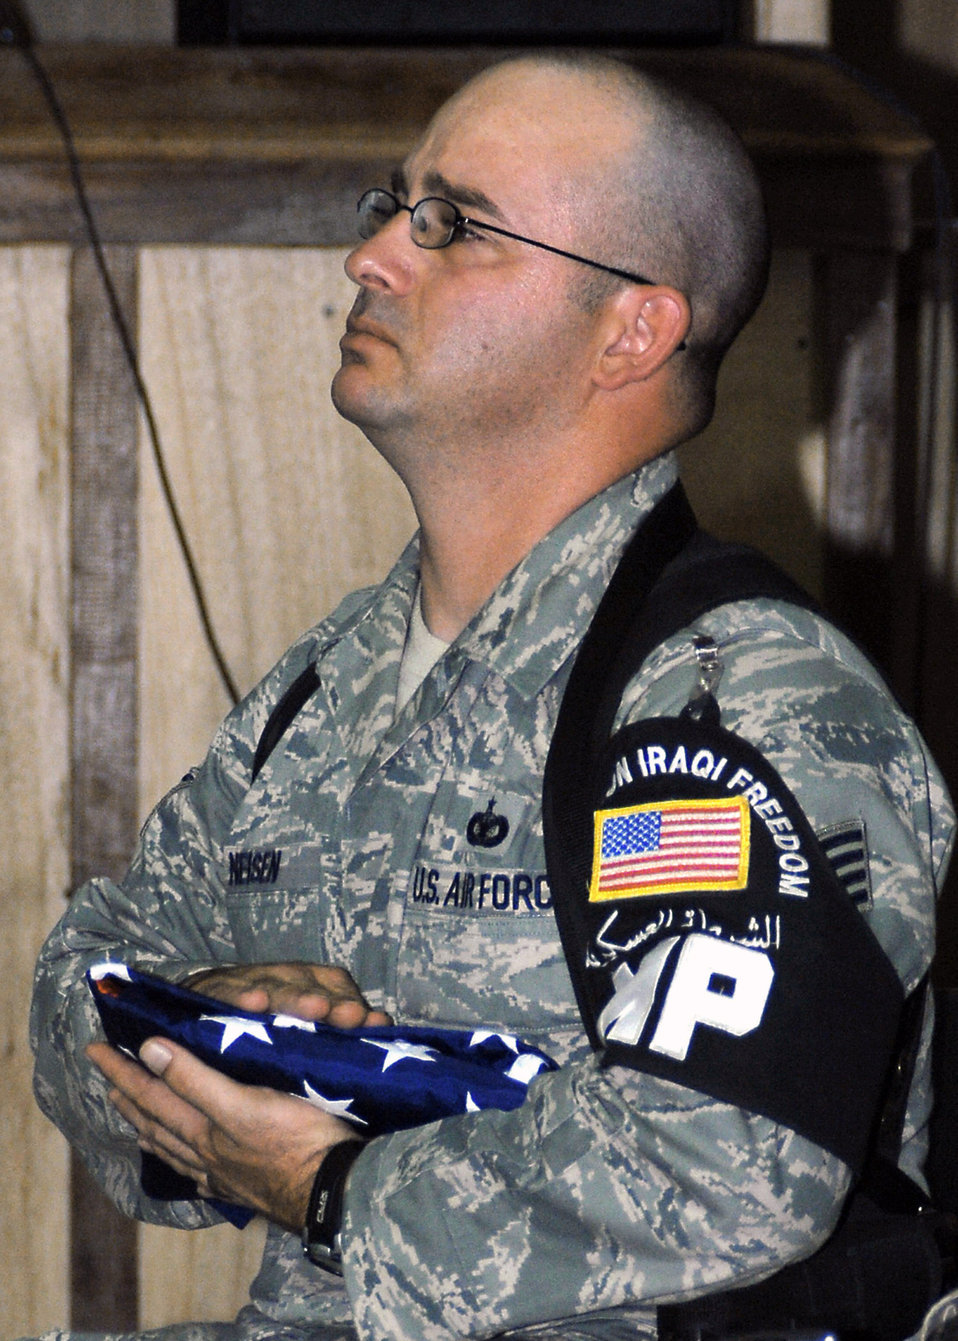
Ali Airmen mourn loss of K-9 team member

Staff Sgt. Sean Neisen holds an American flag that was presented to him in memory of his partner, Goro, Aug. 1 at Ali Base, Iraq. Goro, an 8-year-old German shepherd military working dog, died unexpectedly July 28 from natural causes. Sergeant Neisen, a 407th Provost Marshal Office K-9 handler, and Goro deployed here from the 435th Security Forces Squadron at Ramstein Air Base, Germany.